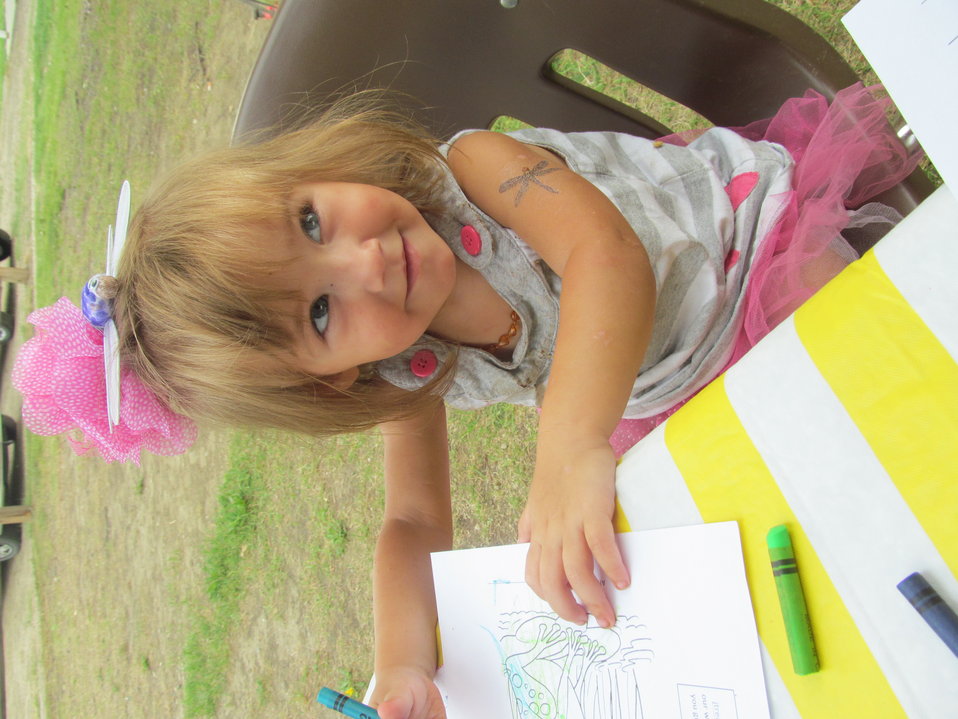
Dragonfly Day is fun for all ages!

(USFWS)